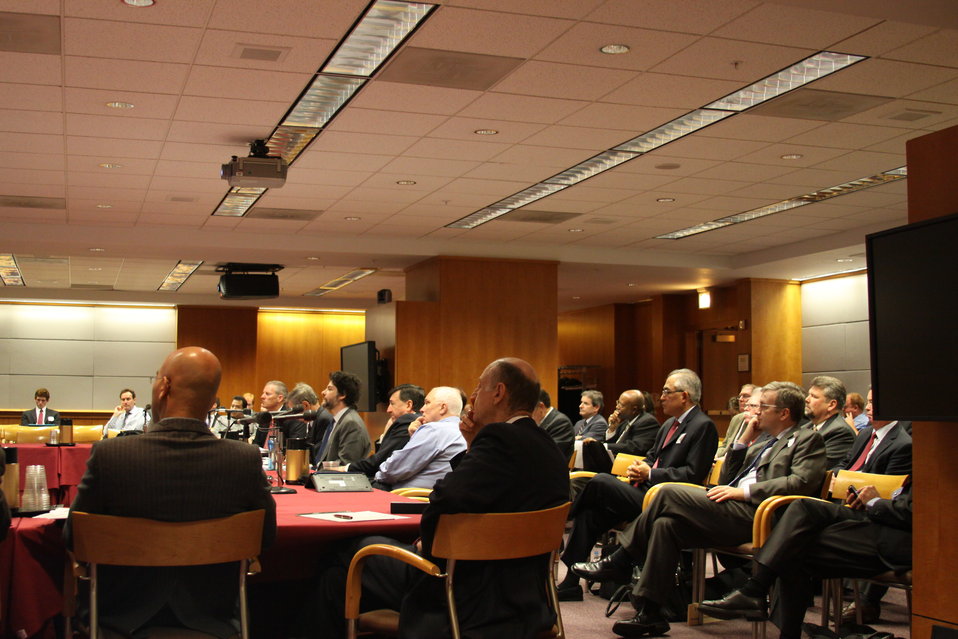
First Open Internet Workshop 12-8-09